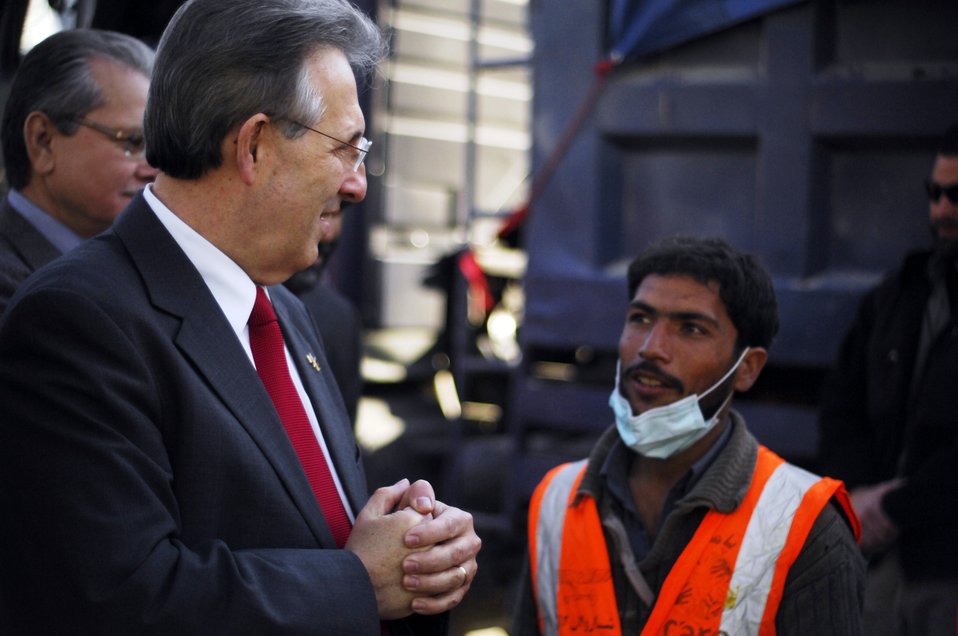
Care10